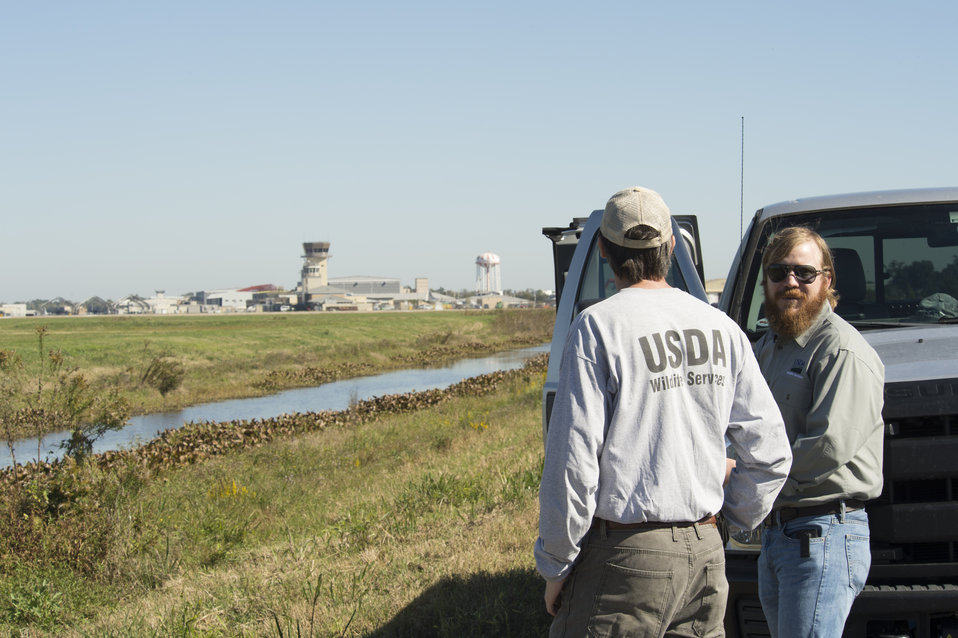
The U.S. Department of Agriculture’s (USDA) Animal and Plant Health Inspection Service (APHIS) Wildlife Services (WS) assists with the humane removal of animals from the Naval Air Station Joint Reserve Base in Belle Chase, LA on Wednesday, Nov. 20, 2013. Animals that wander onto the airstrip are dangerous to aircraft on take off and landing.